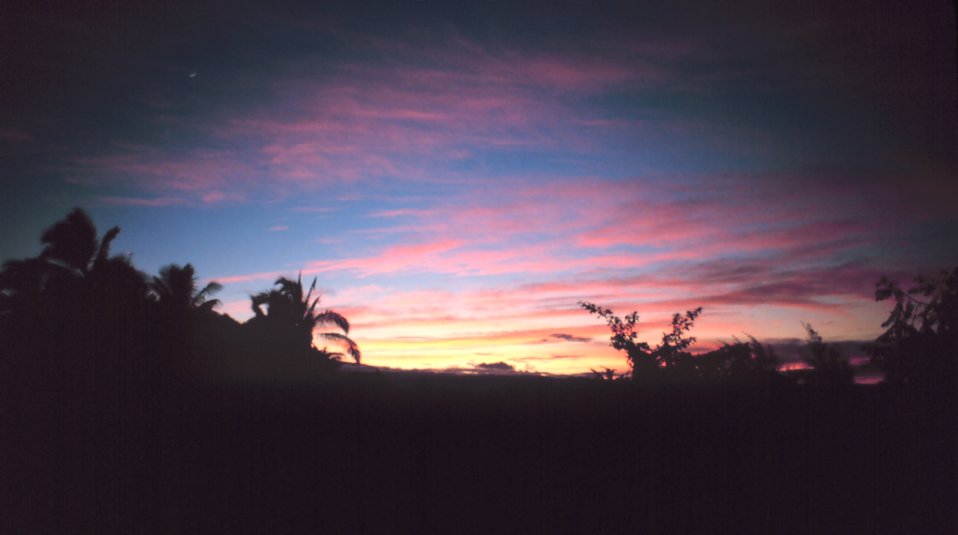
A Hawaiian sunset